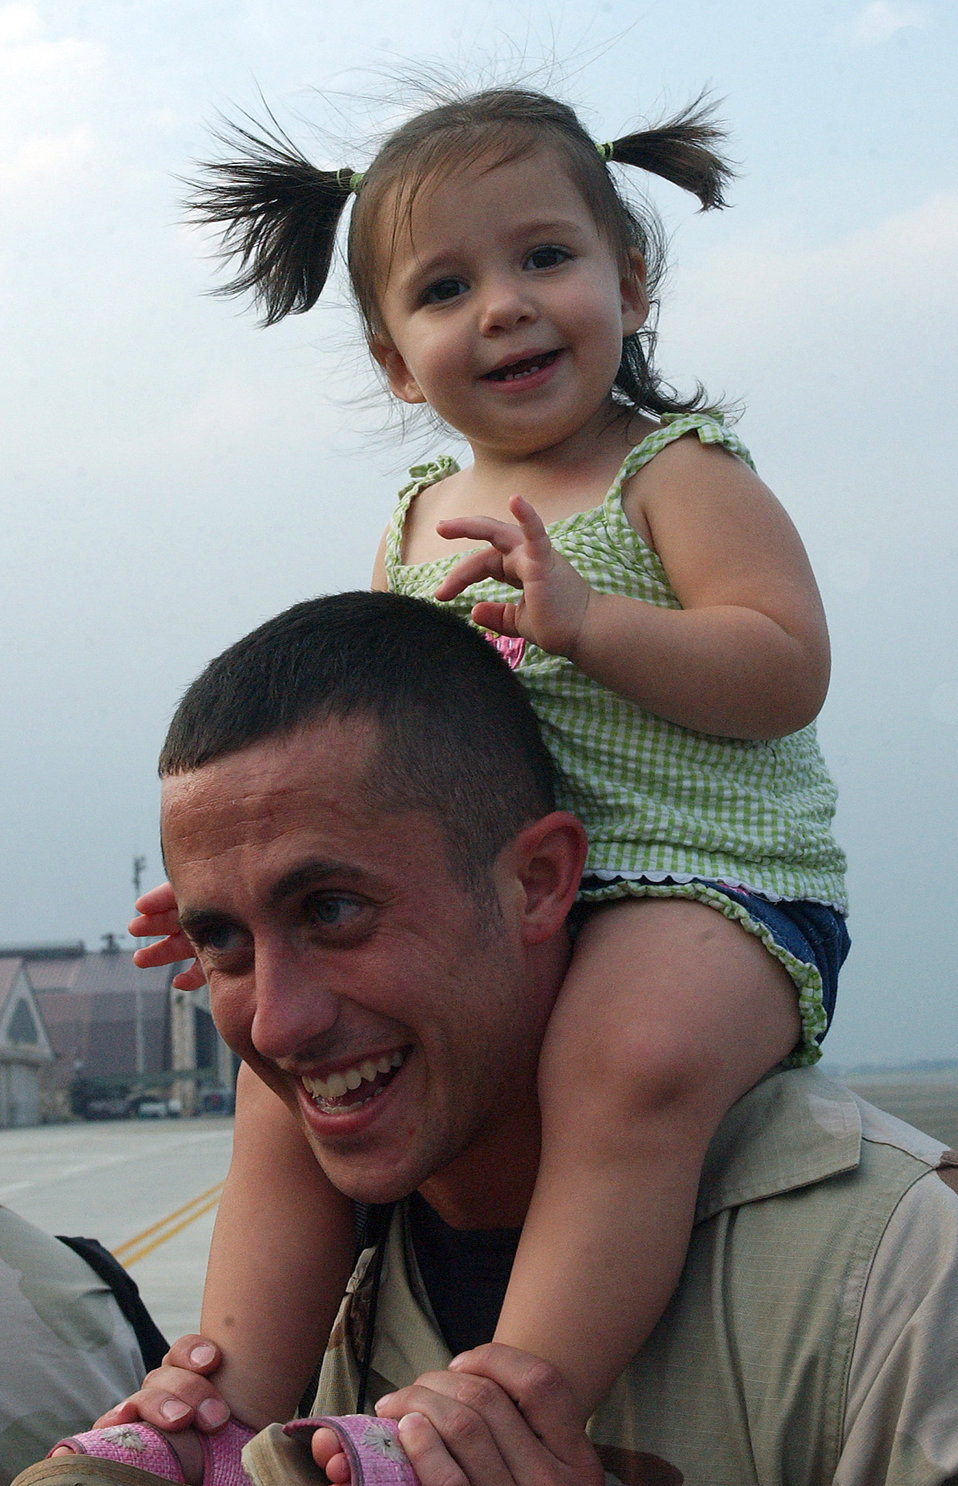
Welcome home!

YOKOTA AIR BASE, Japan -- Senior Airman Kevin Graves holds his daughter, Jaden, during a ceremony here for Airmen returning Sept. 2 from an Operation Enduring Freedom deployment. About 300 people welcomed back nearly 90 deployed Airmen. Airman Graves is assigned to the 374th Civil Engineer Squadron.